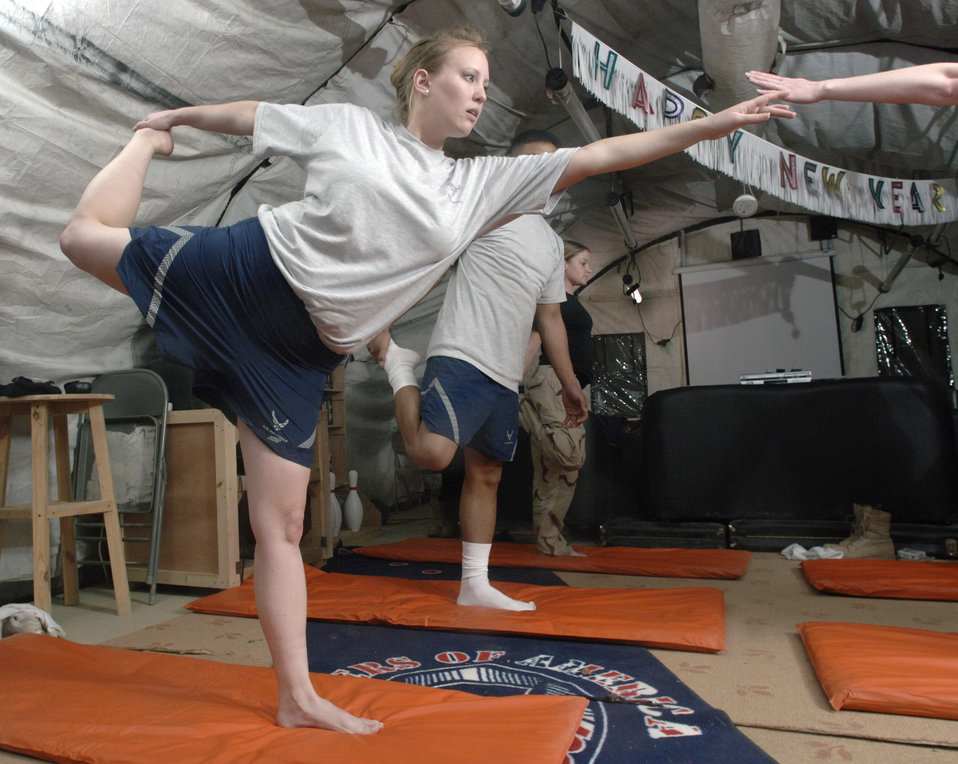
Yoga health

BALAD AIR BASE, Iraq (AFPN) -- Staff Sgt. Bonnie McKinley leads a yoga class during a break in her 15-hour shift at the Air Force Theater Hospital here. The 5-foot-4-inch respiratory therapist with the 332 Expeditionary Medical Group weighs 140 pounds. But, a few years ago, she weighed 215 pounds after a pregnancy. She attributes her weight loss and fitness increase to the practice of yoga and a healthy diet. She is deployed from Sheppard Air Force Base, Texas.